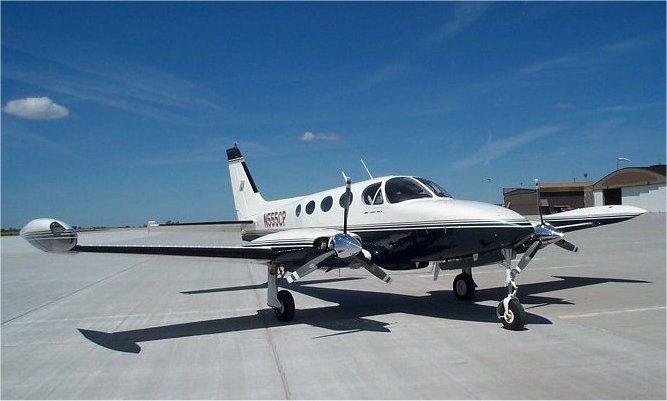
Cessna 340A